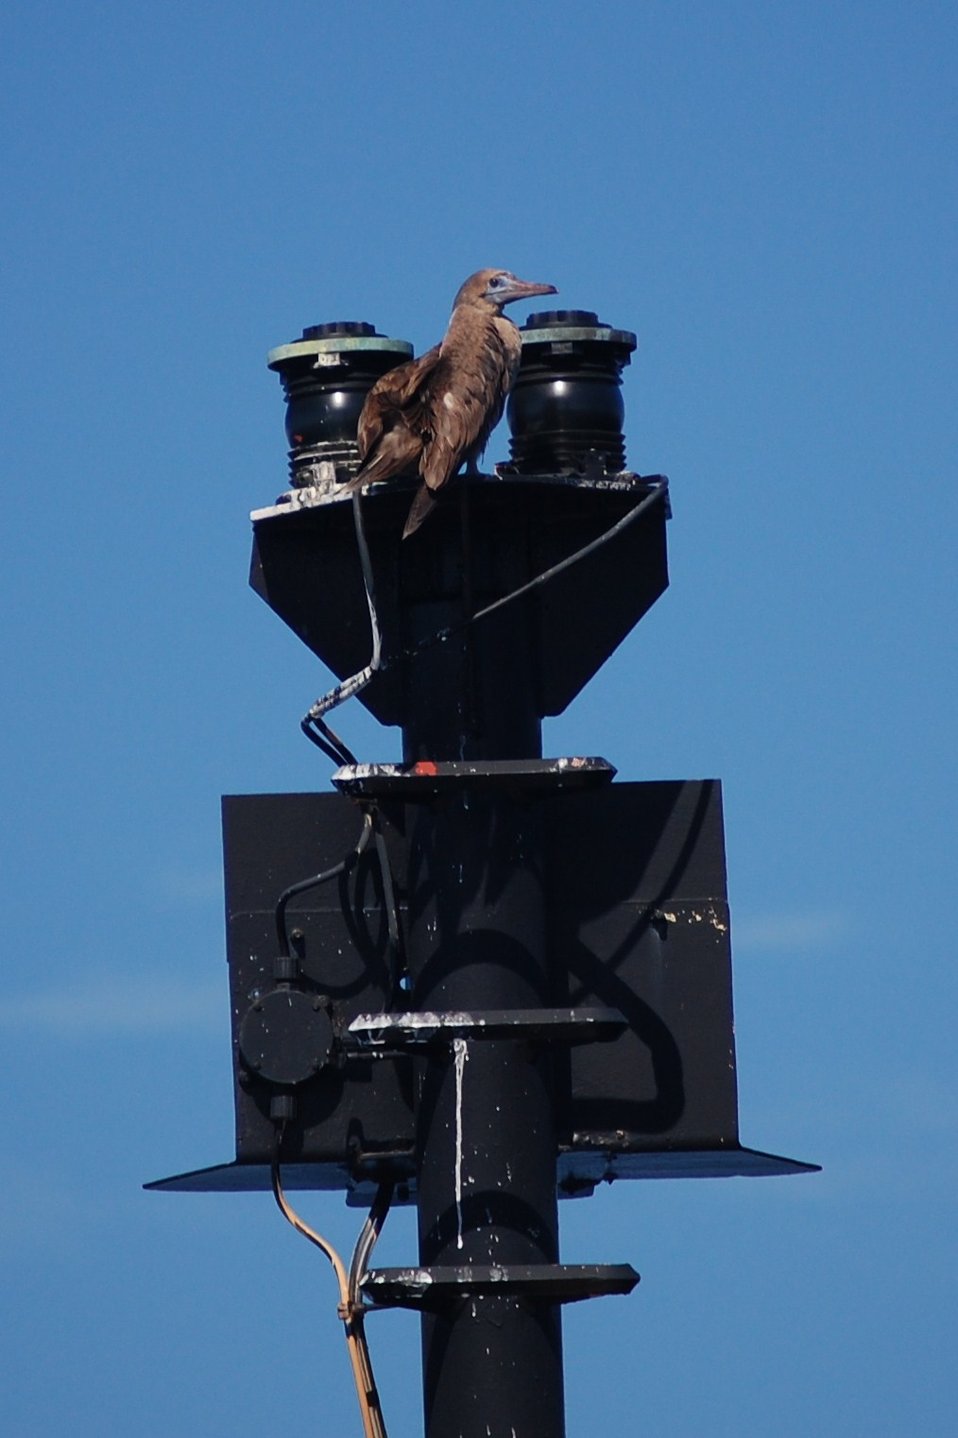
Red-footed booby perched on a navigation light.